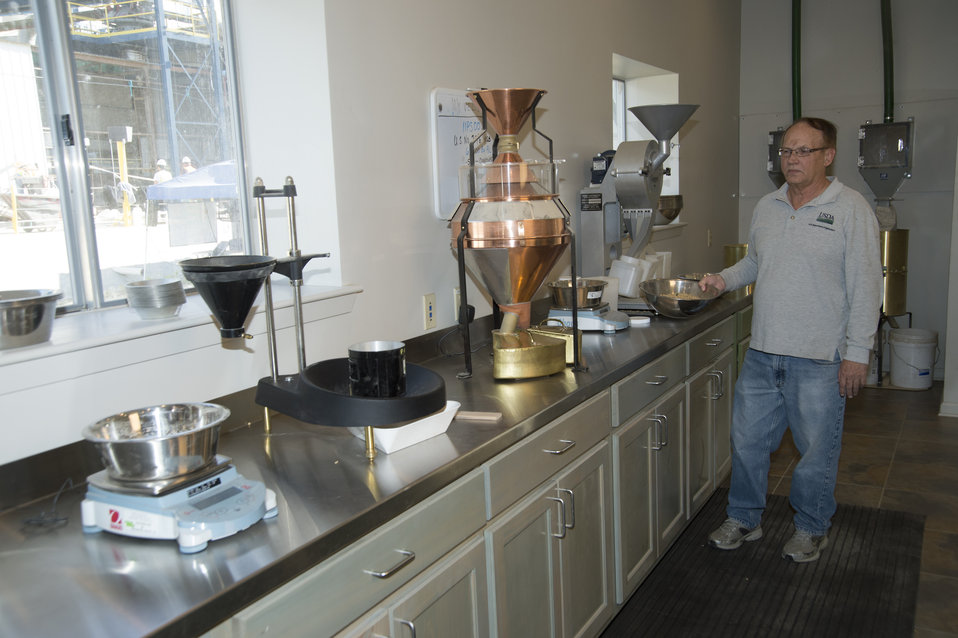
U.S. Department of Agriculture (USDA) Grain Inspection, Packers and Stockyards Administration (GIPSA) Federal Grain Inspection Service (FGIS) employee tests U.S. grain ready for export near the Port of New Orleans in New Orleans, LA on Tuesday, Nov. 19, 2013.